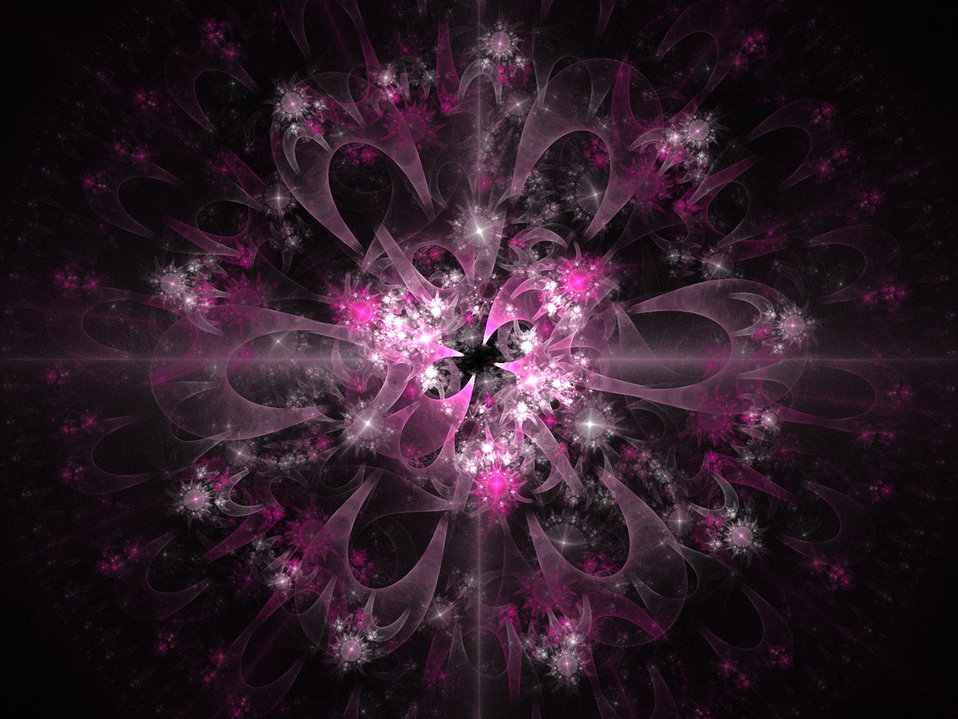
Pink fractal

Pretty fractal image in pinks on black background.